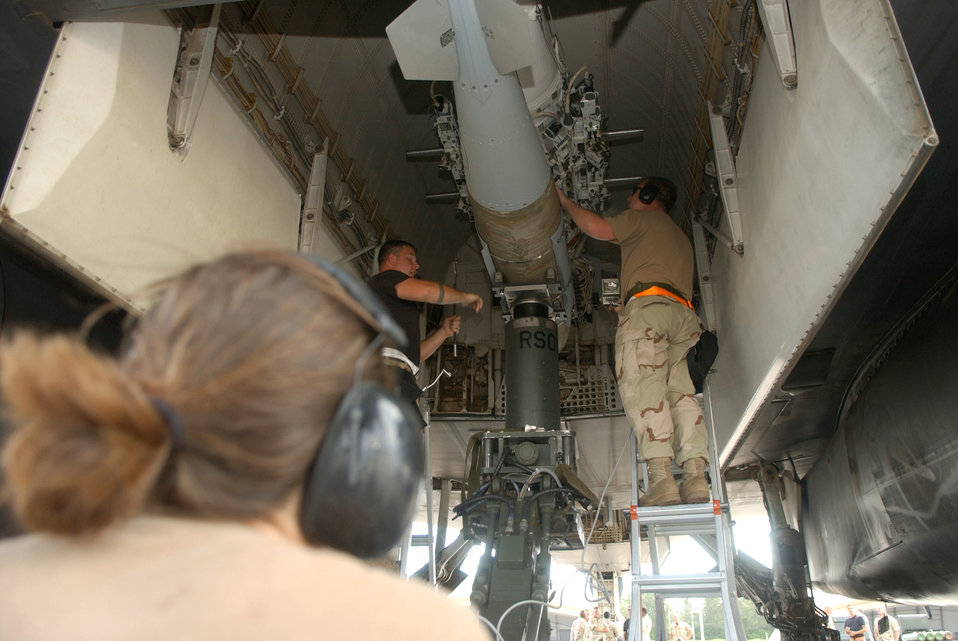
Operation ENDURING FREEDOM

Staff Sgt. Anthony Bray (left) and Staff Sgt. Christopher Strange (right) lock a 2,000-pound Joint Direct Attack Munition into a B-1B Lancer bomb bay. The Airmen are deployed to the 40th Expeditionary Maintenance Squadron from Dyess Air Force Base, Texas.